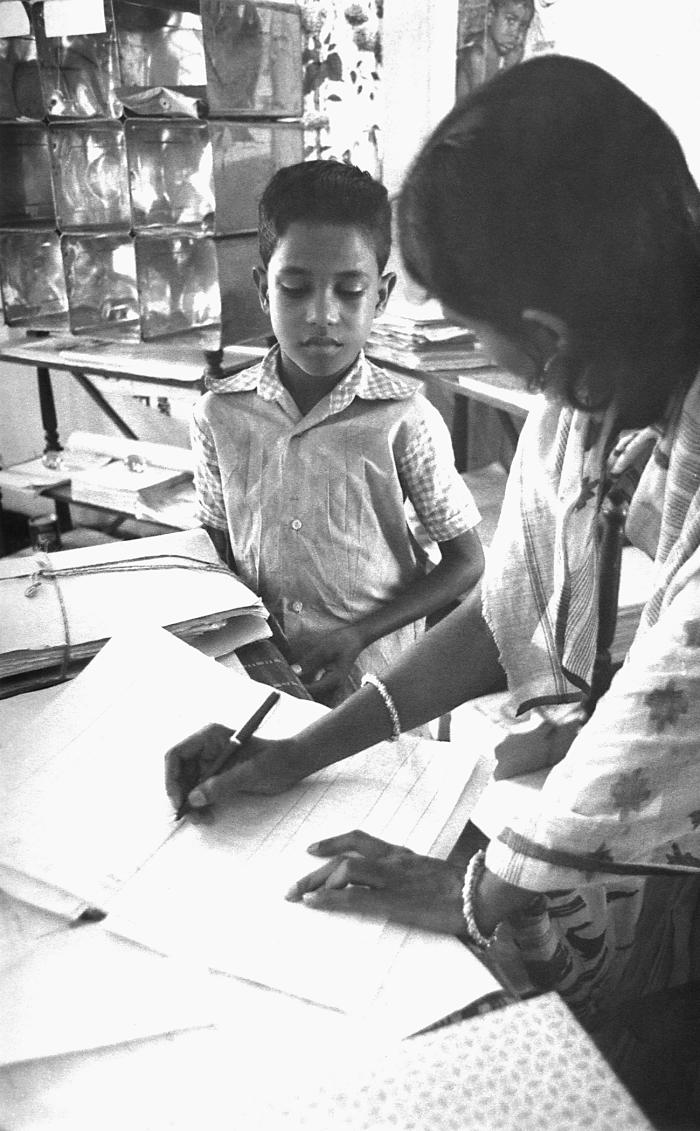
This 1975 image depicted a local Bangladesh smallpox eradication team volunteer questioning a community child, and entering the discussion data into the 'Containment Book'. The keeping of detailed records was extremely important, and is one of the hallmarks of properly practiced epidemiologic science. Smallpox cases that were uncovered had to be followed to a successful outcome, as well as anyone associate with close contact with any confirmed smallpox case. No matter even if it was a single case, all such disease was treated as an emergent situation, and once located were documented and tracked using methods such as 'mapping'.